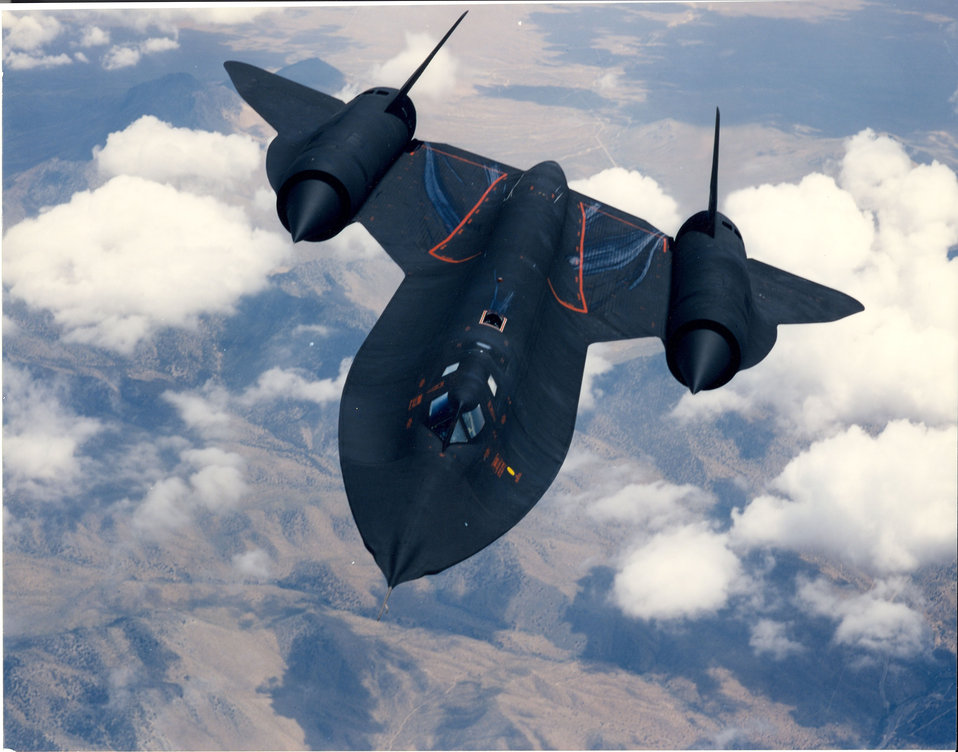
SR-71

The SR-71 from Lockheed underwent test and development at Edwards Air Force Base, Calif., in the mid-1960s, and went on to surpass YF-12 records. For more than 25 years, the aircraft provided the nation with demonstrated strategic reconnaissance capability.